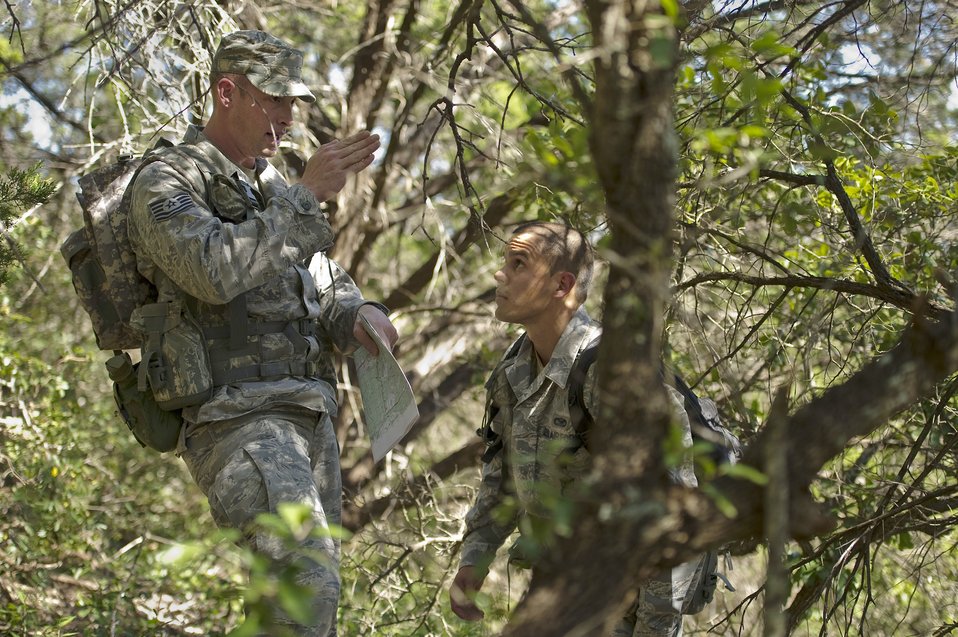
Combat Leadership Course

Tech. Sgt. Jarod Bomberger explains to Senior Airman Daniel West the direction they need to go in order to reach their next checkpoint Oct. 26, 2010, at Camp Bullis, Texas, during the Combat Leadership Course. Sergeant Bomberger and Airman West are completing land-navigation training and must successfully reach several points more than 1,000 meters apart.